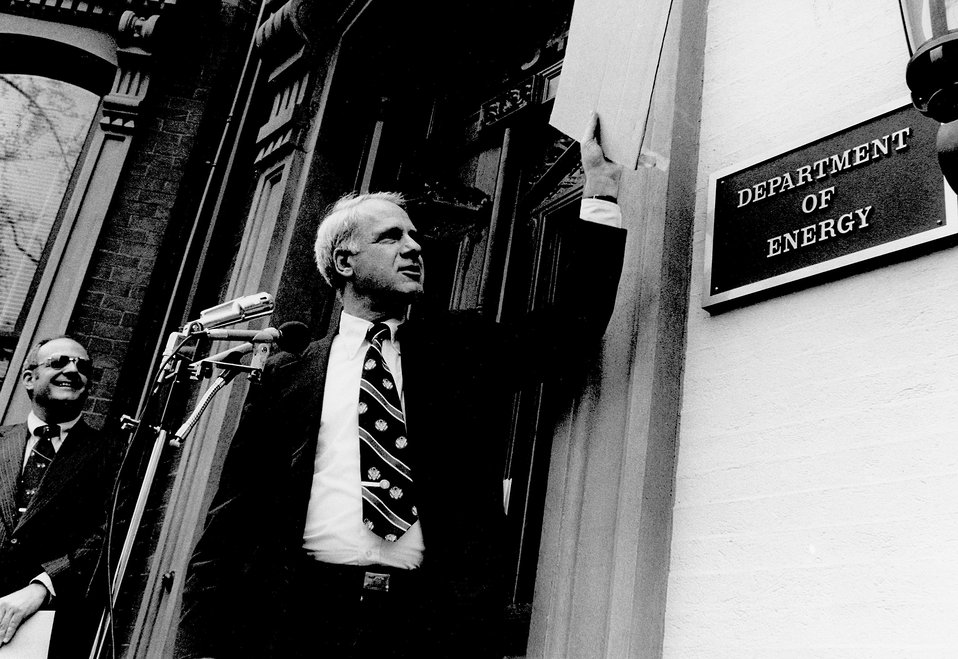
The first Secretary of Energy, James R. Schlesinger.